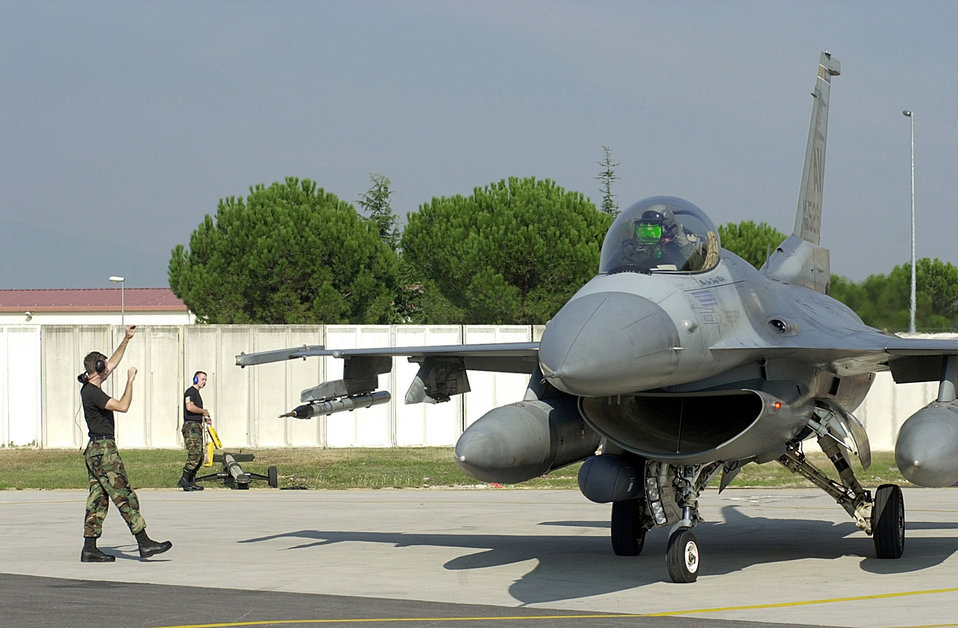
The Claw

FILE PHOTO -- Senior Airman Chris Harvey, 510th Crew Chief, gives Captain Scott